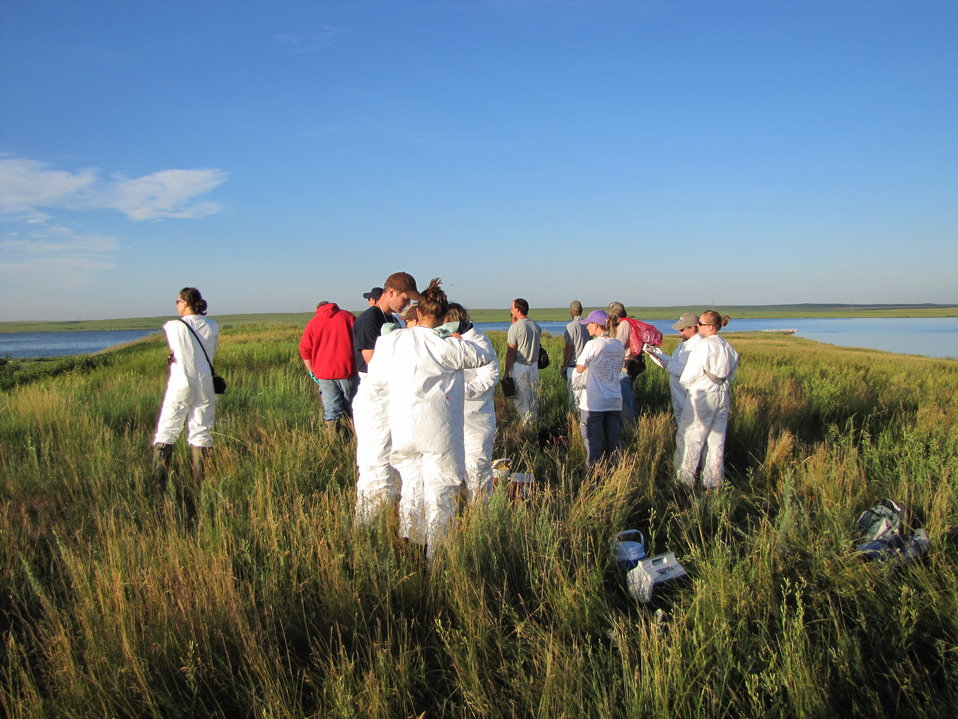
2010 Pelican Banding at Chase Lake NWR

Banding briefing on the nesting peninsula of Chase Lake National Wildlife Refuge in North Dakota. Over 300 young pelicans were banded in 2010.